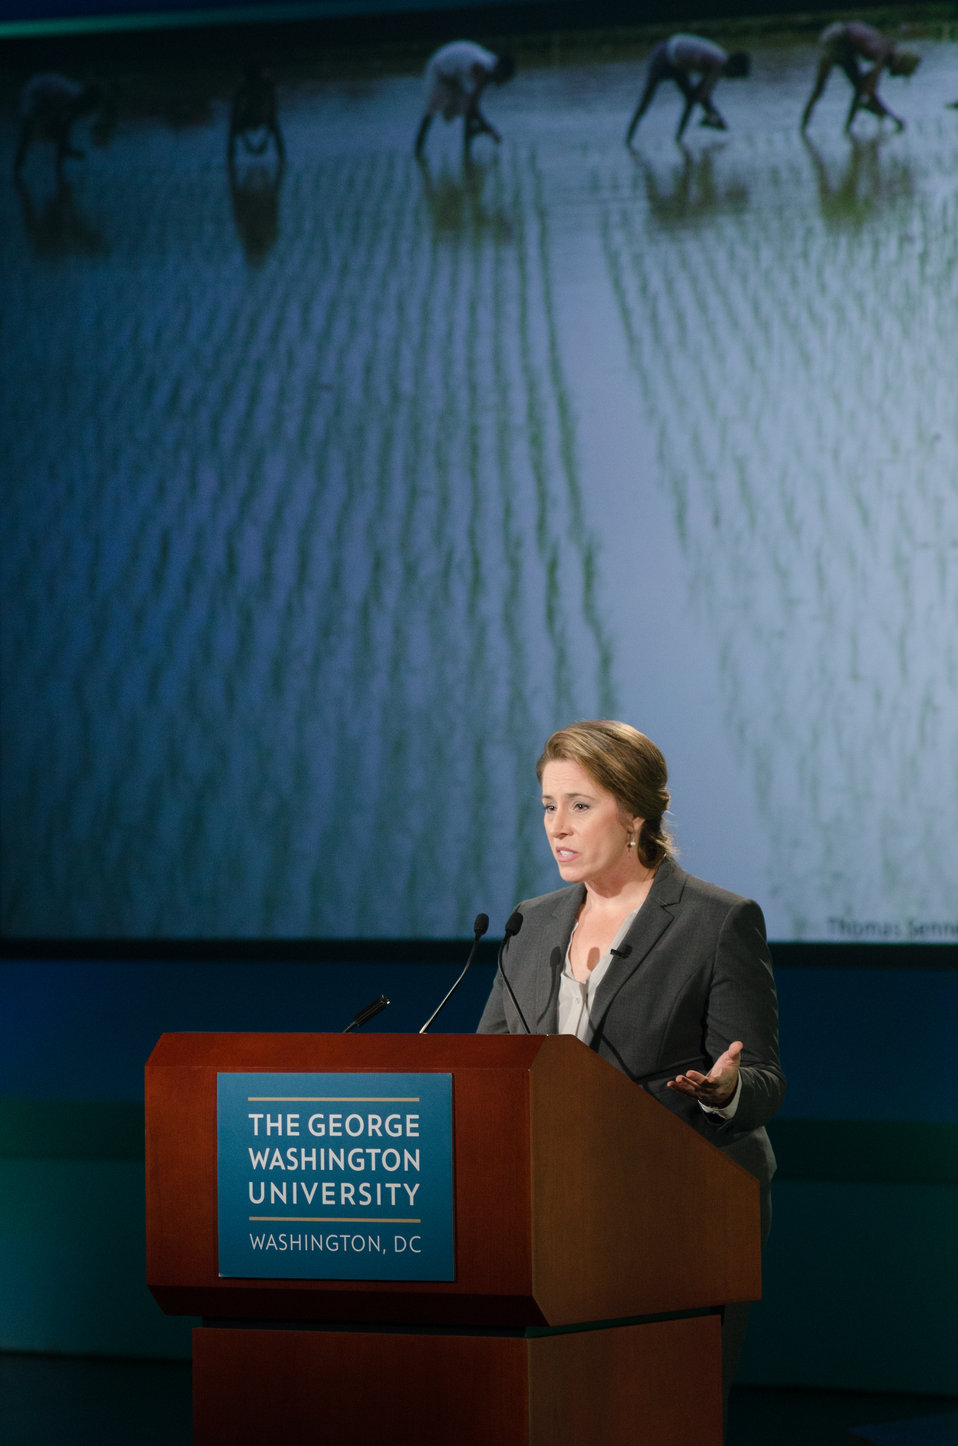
Margaret Walsh, Ph.D., Senior Ecologist Climate Change Program Office at the U.S. Department of Agriculture (USDA) speaking at the Feeding the Planet Summit of leaders from agriculture, business, finance, academia, Non Governmental Organization, government and media, along with a large contingent of college students to engage around promising innovations in global agriculture and food security. The Summit spotlights transformation and scalable developments in policy, practices and technologies with special attention to related issues of gender, climate change and urbanization at The George Washington University in Washington, DC, on Wednesday, Oct. 31, 2013.